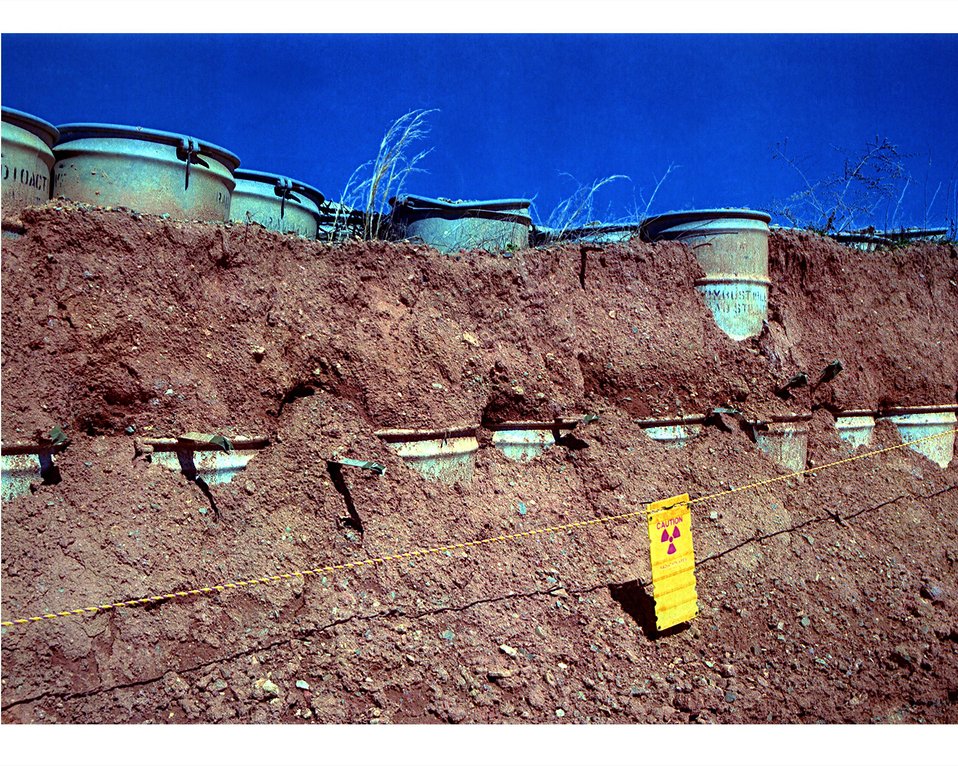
TRANSURANIC (TRU) WASTE FROM TIME OF WEAPONS PRODUCTION MISSION.